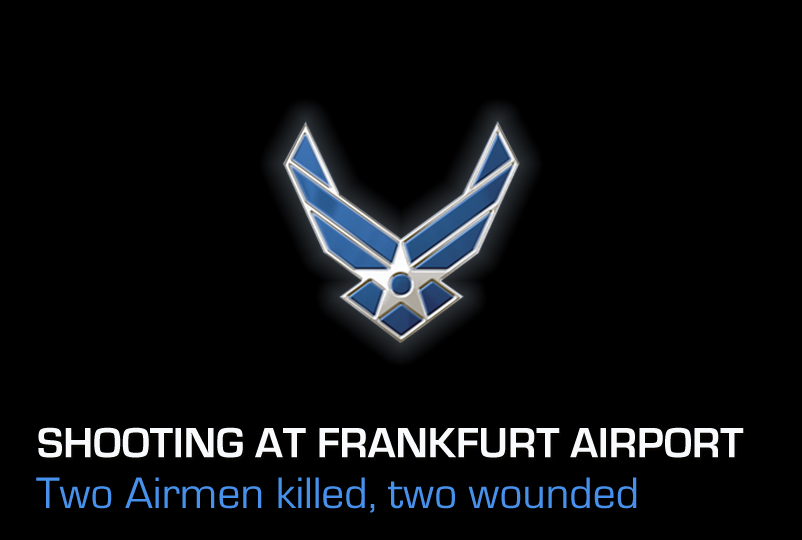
Frankfurt airport shooting